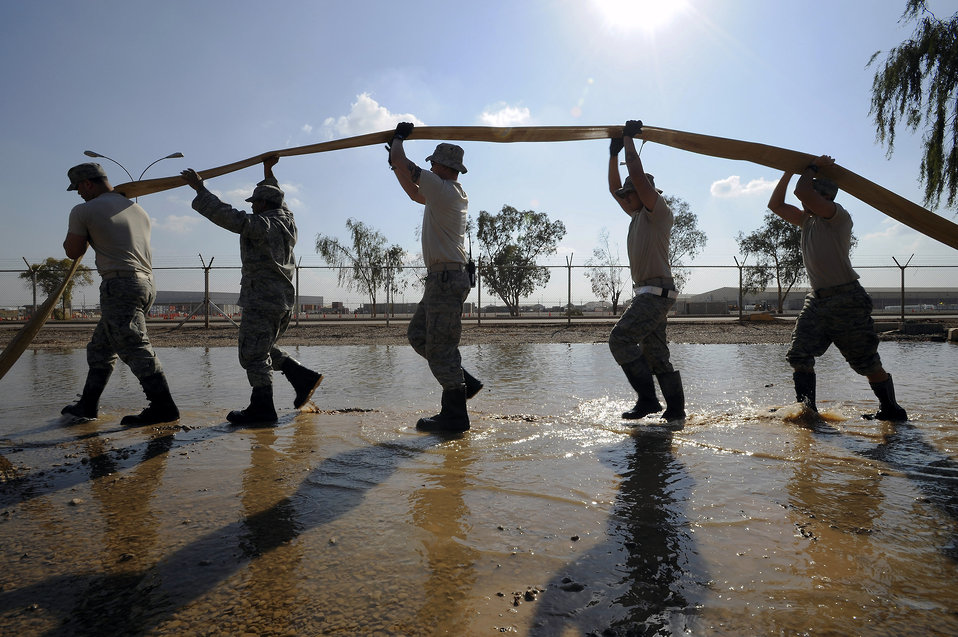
Need a plumber?

Senior Airman Paul Clayborn, Staff Sgt. Mervie Dotson, Tech. Sgt. Eric Miner, Senior Airman Christian Crespo and Airman 1st Class Gregory Hayes drain a hose while pumping floodwater out of a low-lying area Nov. 3 at Joint Base Balad, Iraq.